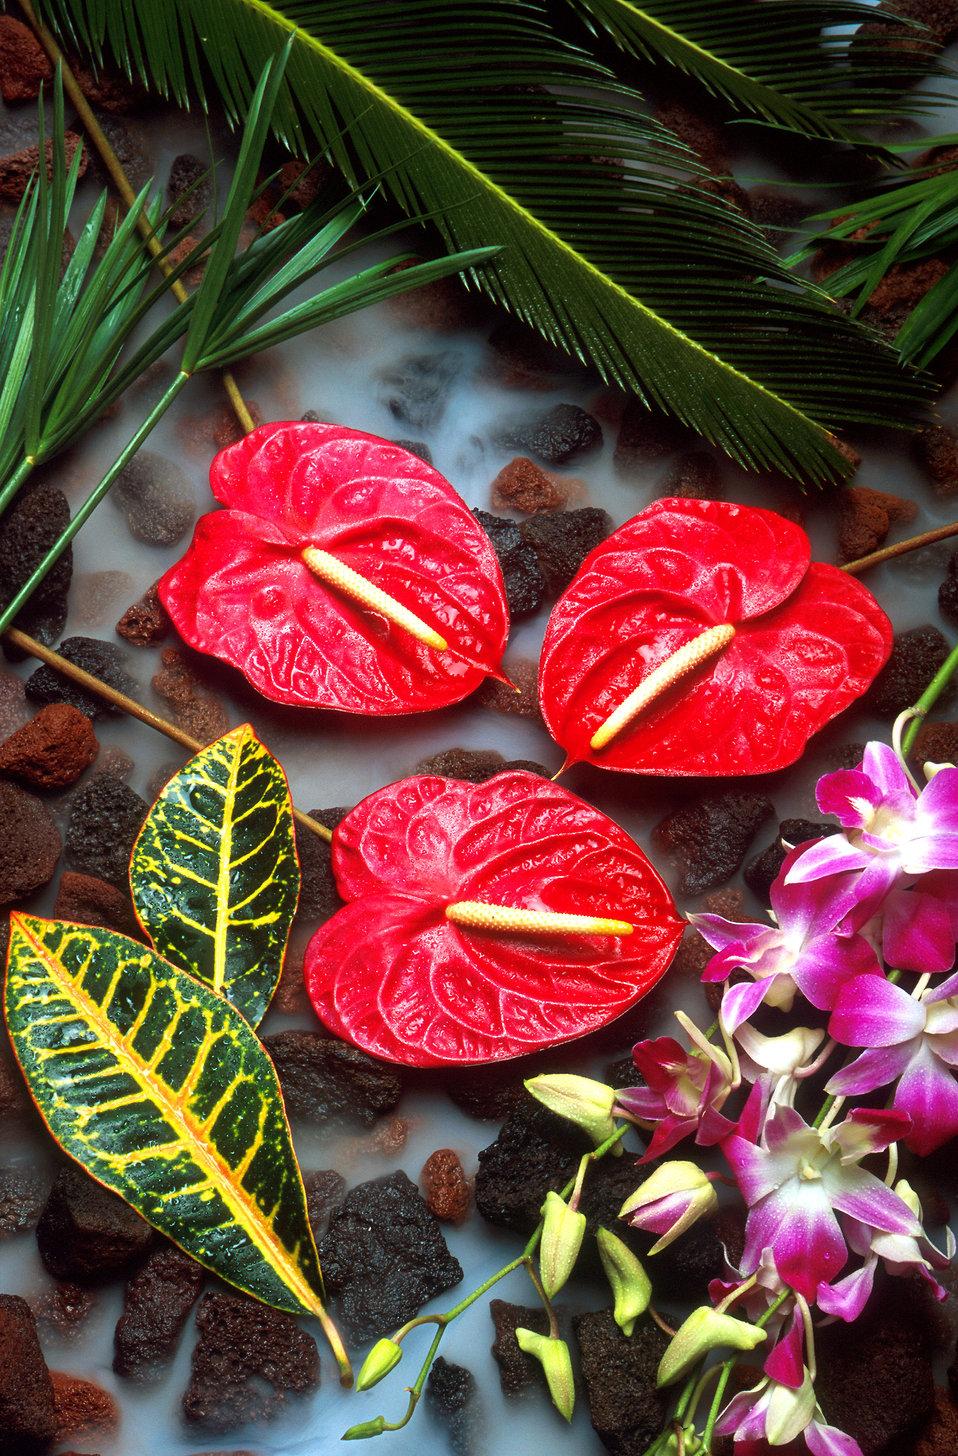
Orchids and anthuriums bring premium prices at nurseries and floral shops around the world, but insects are attacking these plants. The U.S. Department of Agriculture’s (USDA) Agricultural Research Service (ARS) scientists are looking for environmentally friendly ways to protect the showy plants.